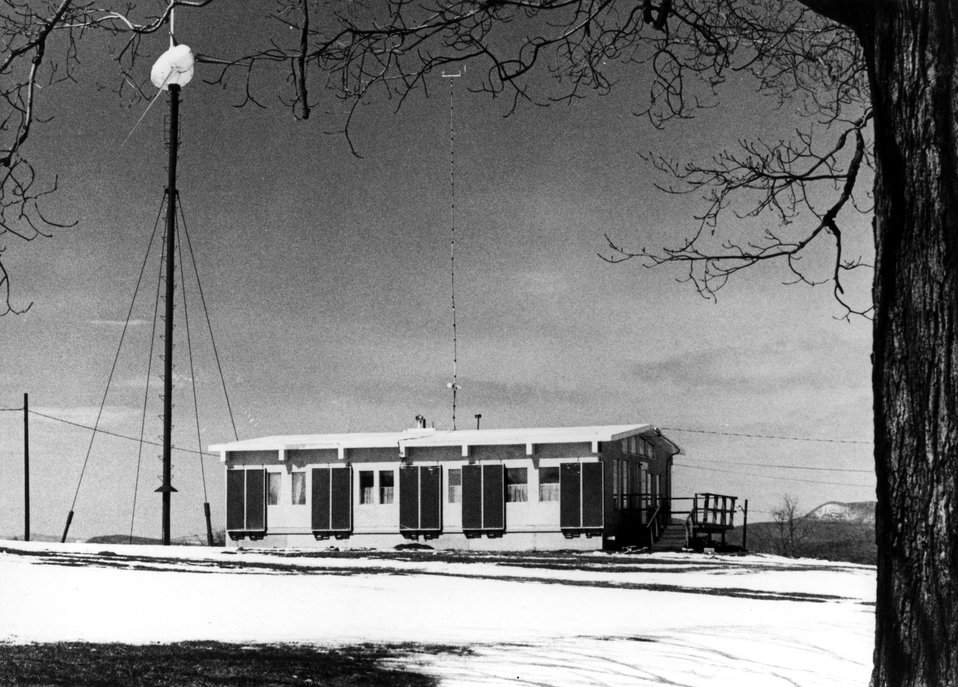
A three-bladed wind turbine and a solar heating system together provide about 80 percent of the heat needed by this experimental home at the University of Massachusetts, Amherst. c. 1977